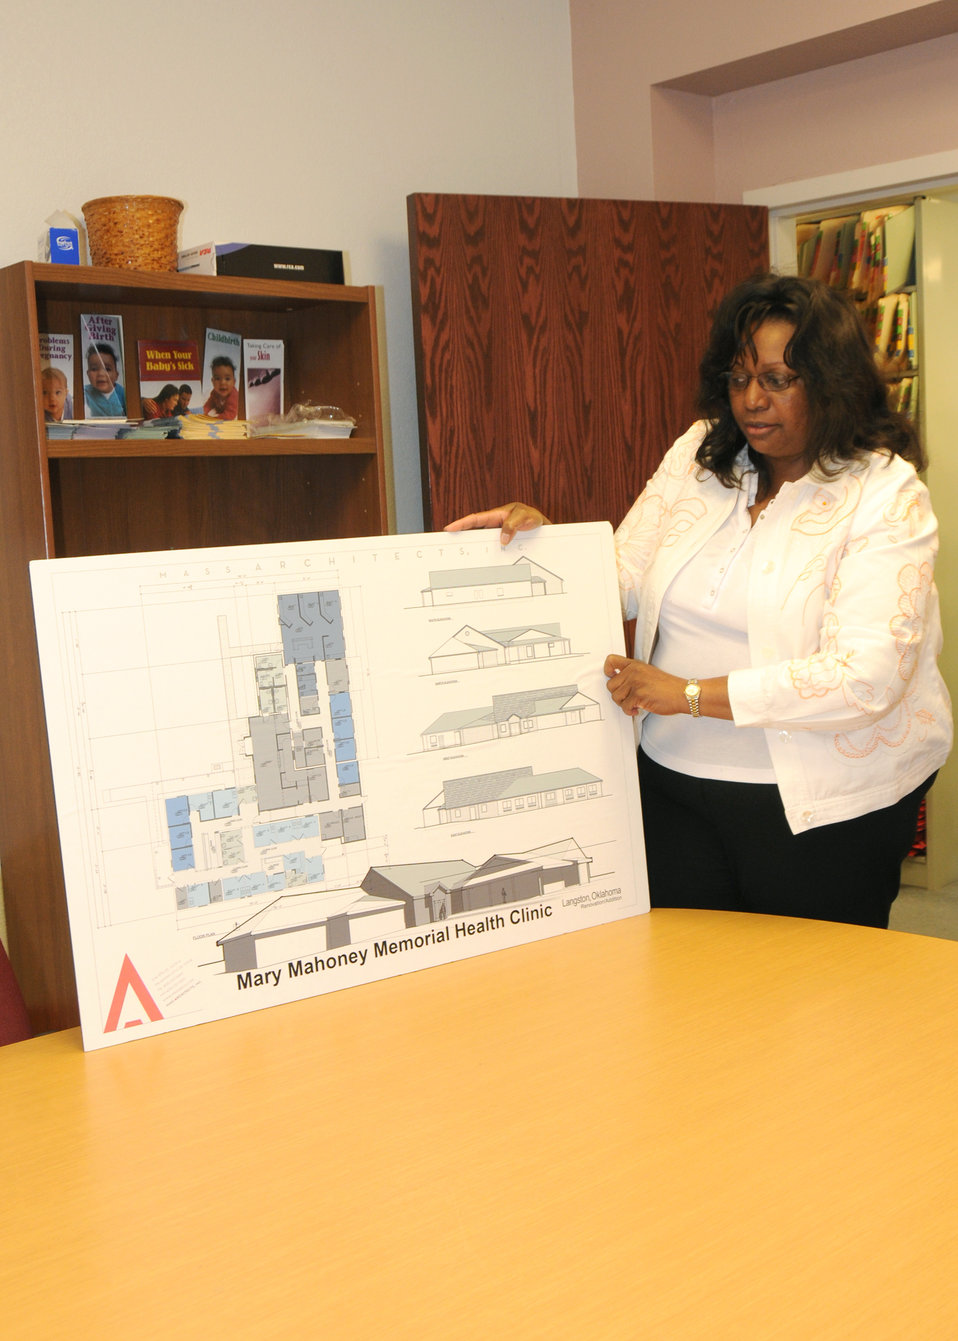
Rosalyn Johnson explains the new expansion planned for the Mary Mahoney Health Center in Langston, OK. The clinic received a CF grant of $100,000.00 and a CF l Direct Loan of $563,863.00 from Rural Development from ARRA funding.